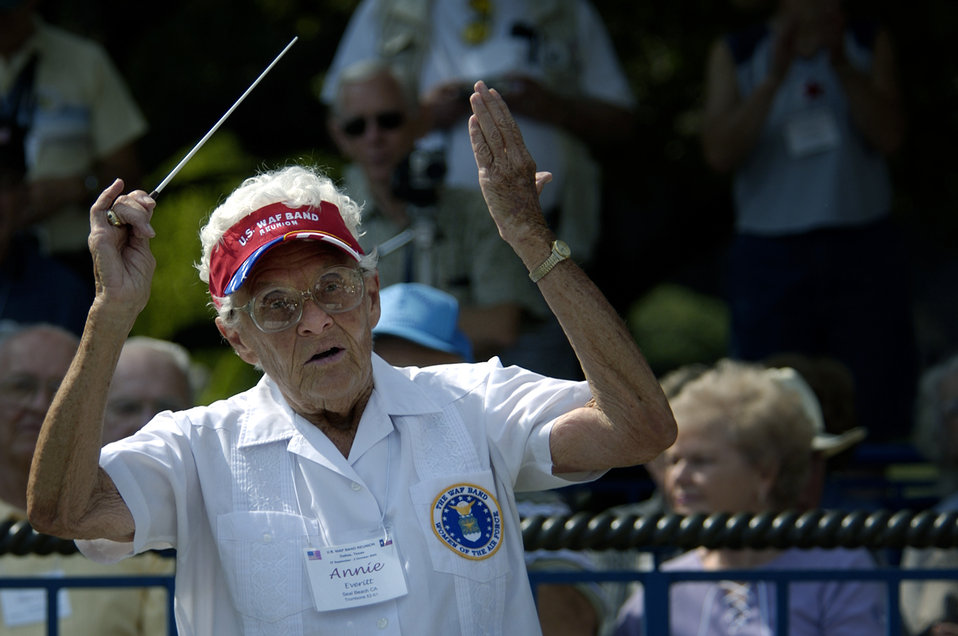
Leader of the band

DALLAS -- Annie Everitt, a former member of the U.S. Air Force Women in the Air Force Band, leads her fellow musicians during a concert here at this year's Texas State Fair. At age 80, Ms. Everitt is the oldest participant at this year's WAF band reunion. Her time with the band spanned nine years from 1952 to 1961. While with the band, she was a trombone player and also the band's alternate conductor.